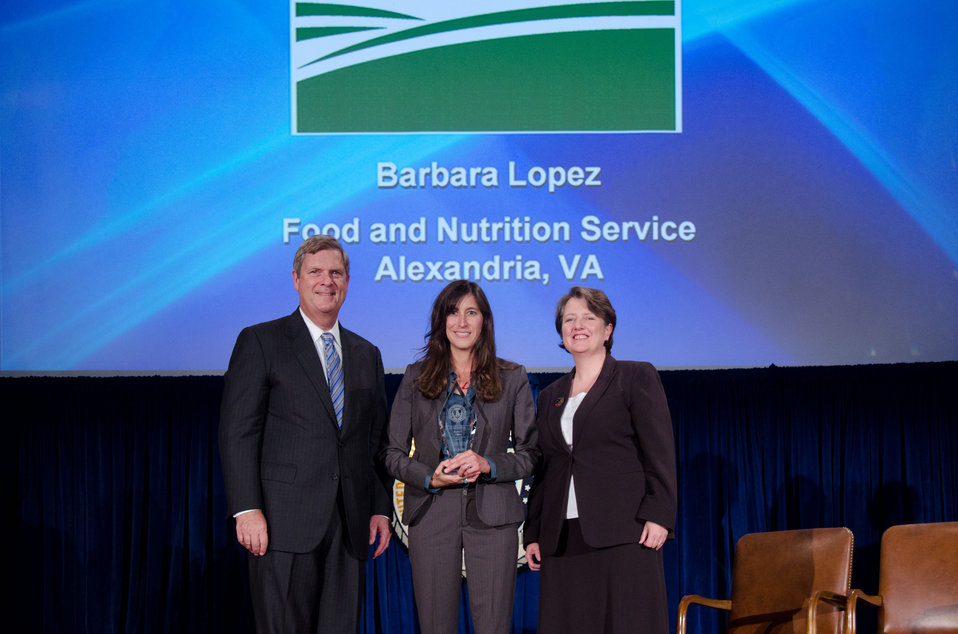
Agriculture Secretary Tom Vilsack (l) and Deputy Secretary Kathleen Merrigan (r), presents the Ensuring That All Of America’s Children Have Access To Safe, Nutritious and Balanced Meals Award to Barbara Lopez, Food an Nutrition Service, Alexandria, VA. For commitment, leadership, and excellence in feeding the nation’s children through innovative public engagement initiatives, new models of service delivery, and improving USDA’s relationships with sovereign tribal nations. On Wednesday, September 14, 2011 in the Jefferson Auditorium at the US Department of Agriculture in Washington, DC.